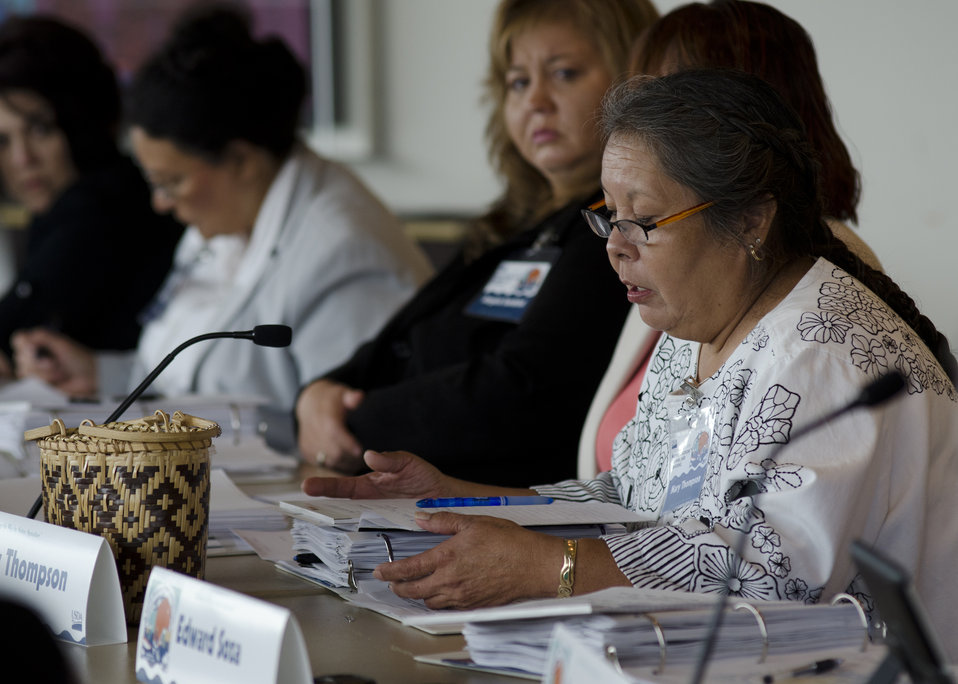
Farmer/Rancher of the Eastern Band of Cherokee Indians in Cherokee, NC., Mary Thompson speaks at the first business meeting of U.S. Department of Agriculture’s (USDA) Council for Native American Farming and Ranching (CNAFR) held at the first business meeting of the U.S. Department of Agriculture’s (USDA) Council for Native American Farming and Ranching (CNAFR) held at the National Museum of the American Indian in Washington, D.C., on Tuesday, Aug. 14, 2012. CNAFR was created to advise the Secretary on ways to eliminate barriers to participation for Native American Farmers and Ranchers in USDA programs. The Council was established as part of the Keepseagle settlement, and is conducted under the oversight of USDA's Office of Tribal Relations under the Office of the Secretary of Agriculture.